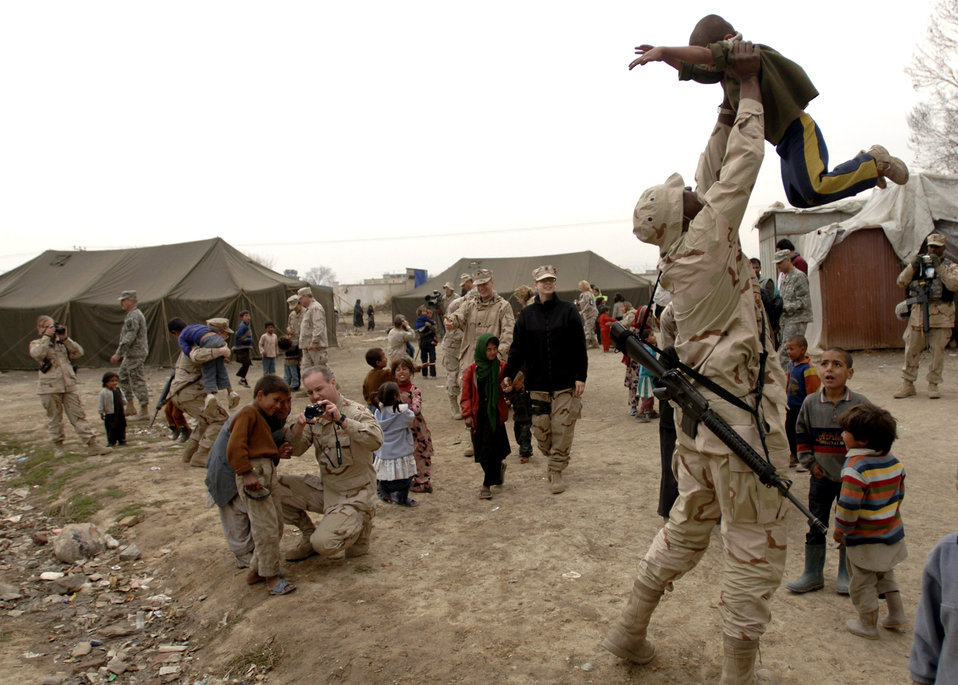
Spreading some joy

DOD civilians and coalition servicemembers play with local refugee children in Dar Ul Aman, Afghanistan, in support of a volunteer community reach program. During the visit, some 200 bags of clothes, shoes and toys were distributed.